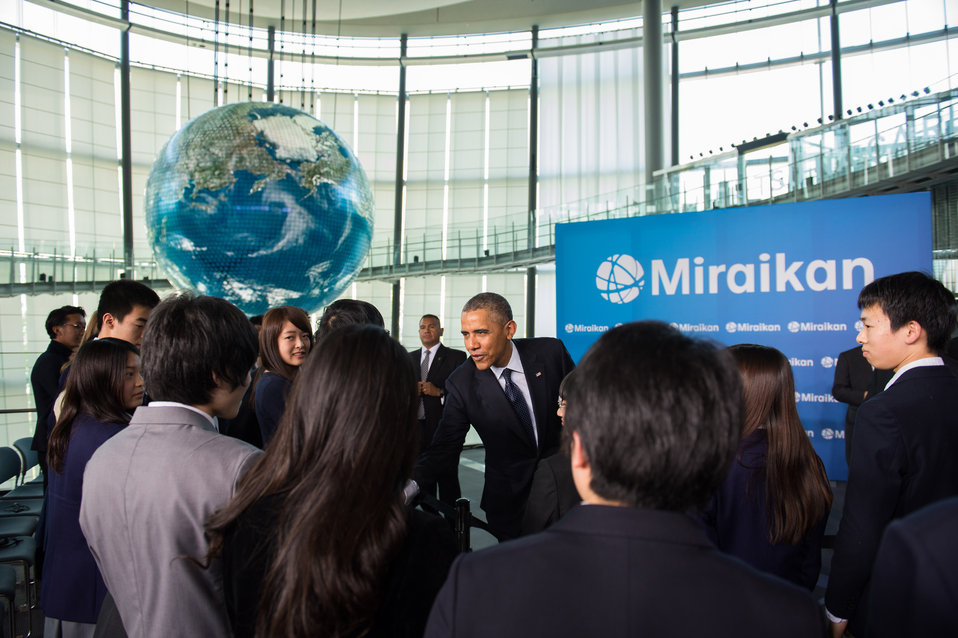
President Obama Talks to Japanese Students

U.S. President Barack Obama talks to Japanese students during his visit to the Miraikan (the National Museum of Emerging Science and Innovation) in Tokyo, Japan, on April 24, 2014.